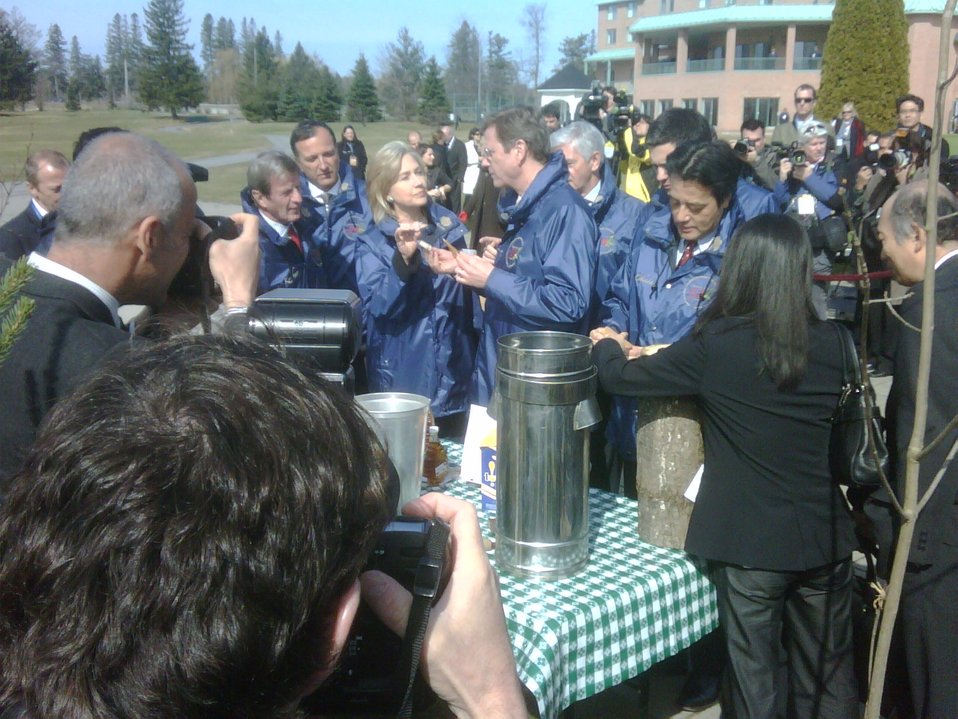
Secretary Clinton With Foreign Ministers at the G8 Meeting

U.S. Secretary of State Hillary Rodham Clinton speaks with other foreign ministers during a G8 Foreign Ministers gathering in Gatineau, Canada, March 30, 2010.